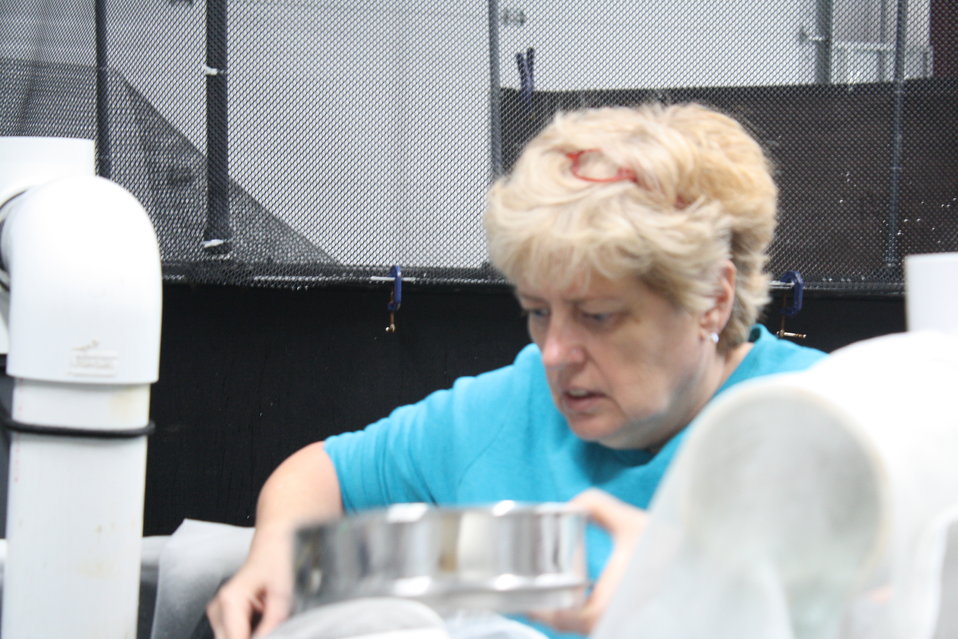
Nashua National Fish Hatchery welcomes regional office employees

Straining shad eggs.